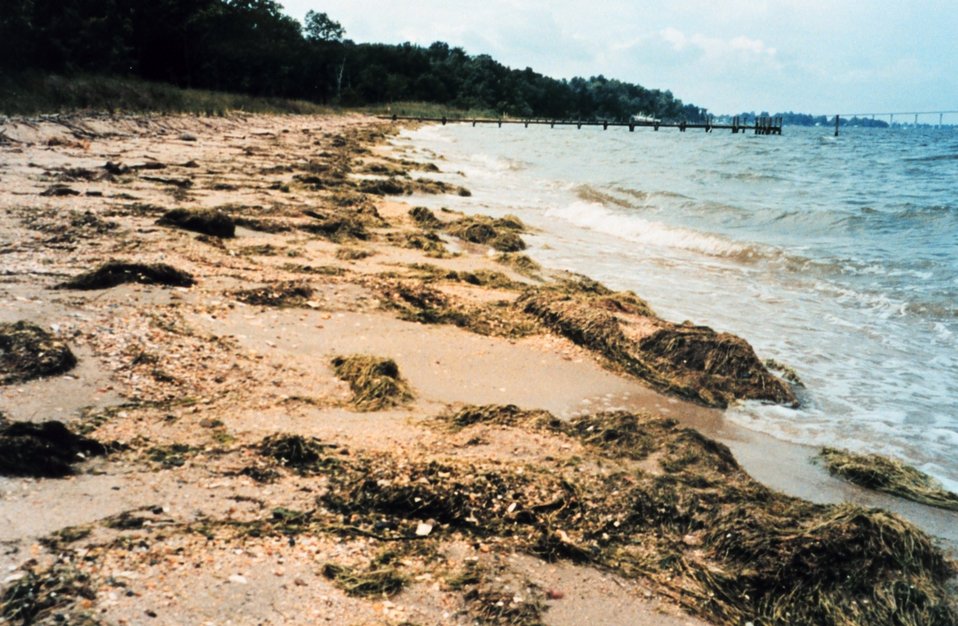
Horned pondweed - Zannichellia palustrus - growth usually peaks in June and begins covering the beaches. Submerged aquatic vegetation (SAV) provides food and habitat for a wide variety of biota, but has been in serious decline for the last several decades.